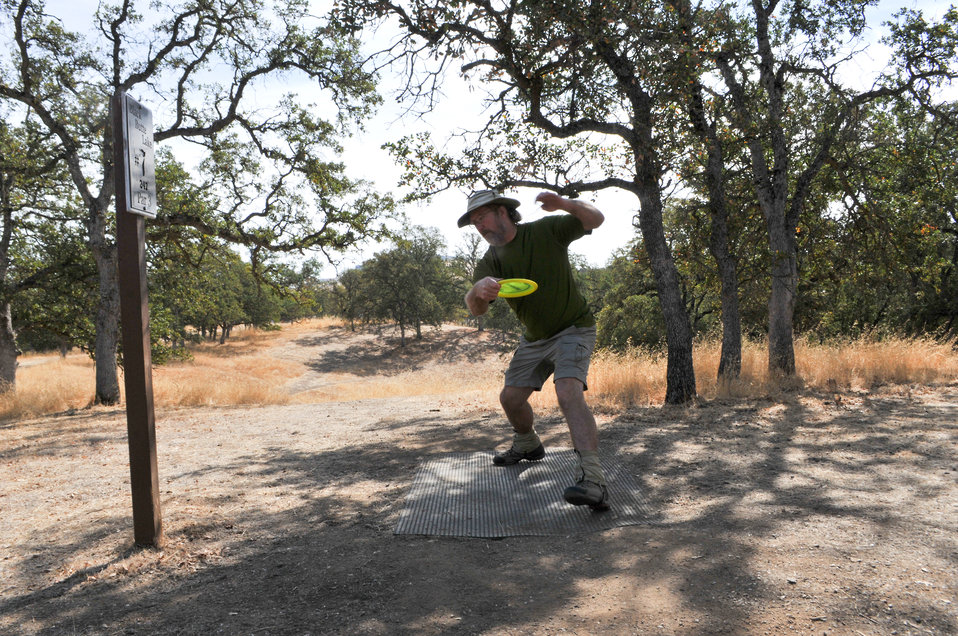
BLACK BUTTE LAKE, Calif. (Oct. 18, 2010) -- A disc golfer tees off during the Professional Disc Golf Association's Norcal Series Championships here Oct. 16. The U.S. Army Corps of Engineers Sacramento District’s Black Butte hosted the tournament Oct. 15-17 at its new disc golf course, built on park lands by The Orland Aces disc golf club under a partnership with the Corps. More than 150 disc golfers from as far as Texas competed in the tournament.